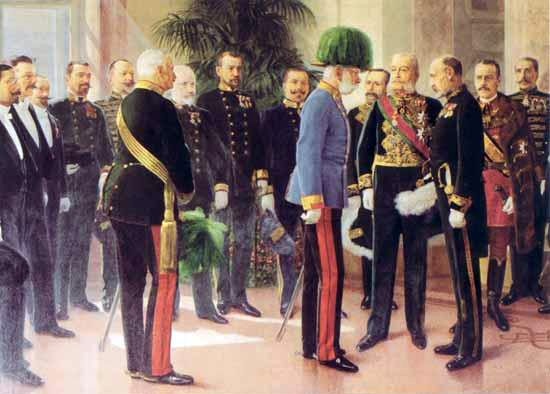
Deutsch: Kaiser Franz Joseph besucht am 18. April 1904 das kürzlich erbaute Haus-, Hof- und Staatsarchiv (Mitte: der Kaiser mit grünem Federhut, ihm gegenüber Archivdirektor Hofrat Dr. Gustav Winter, zwischen ihnen Außenminister Graf Goluchowski), Ausschnitt eines Wandgemäldes im Stiegenhaus des Haus-, Hof- und Staatsarchivs von Karl J. Peyfuss (vollendet 1908)